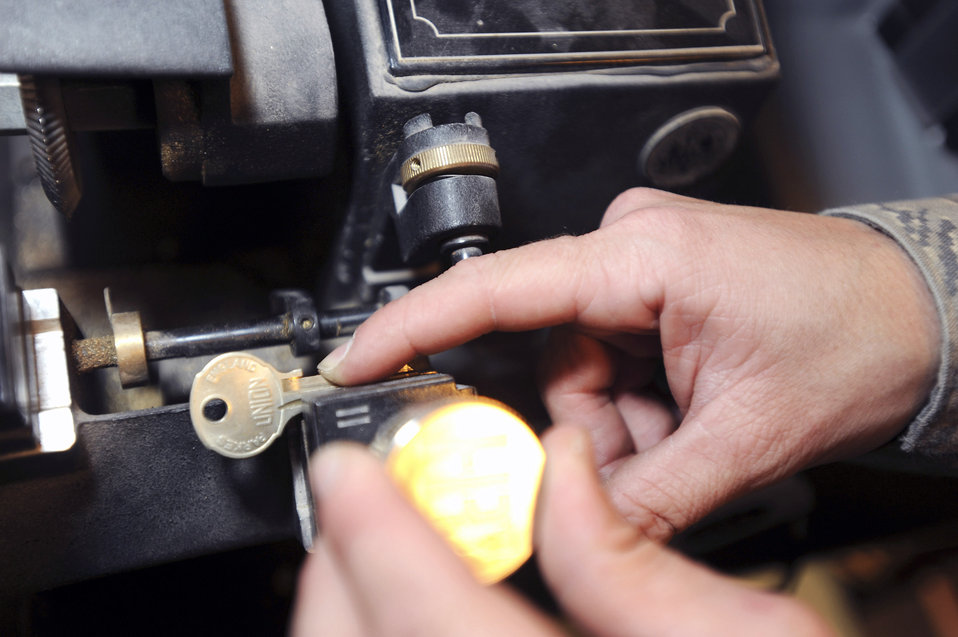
The key masters

Senior Airman Jesse Testudine adjusts the master key in a key cutting machine to make a key for a customer Feb. 25 at an air base in Southwest Asia. He is a locksmith with the 379th Expeditionary Civil Engineer Squadron, and is deployed from Misawa Air Base, Japan.